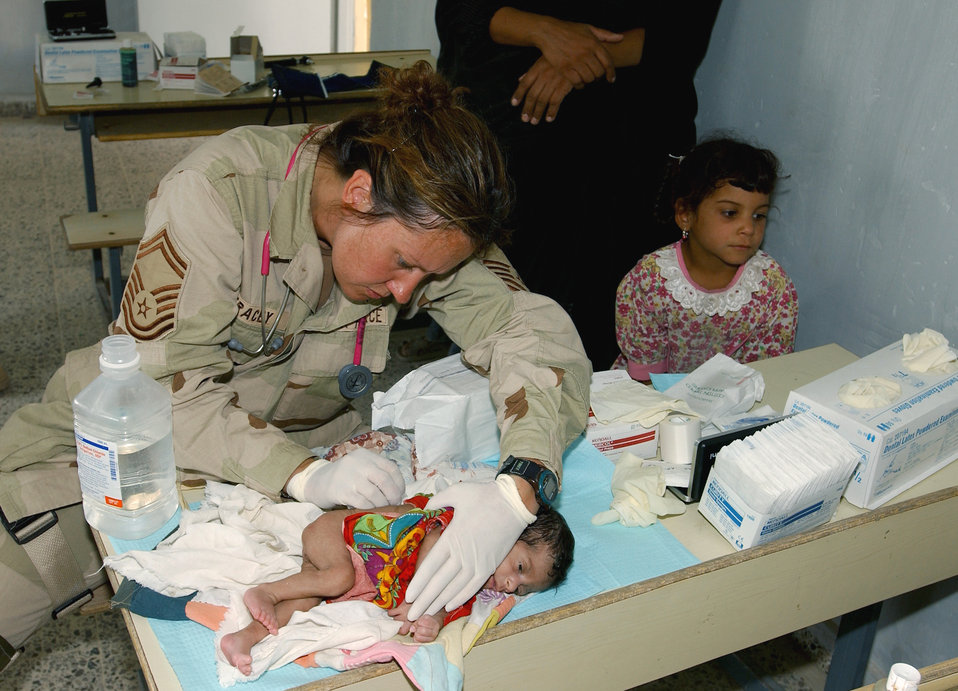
Visiting the doc

SWABE, Iraq -- Senior Master Sgt. Tommie Tracey treats a young infant's bedsores here during a medical and humanitarian assistance mission. Tracey is deployed with the101st Expeditionary Rescue Squadron from the Air National Guard's 122nd Medical Group, in Fort Wayne, Ind.